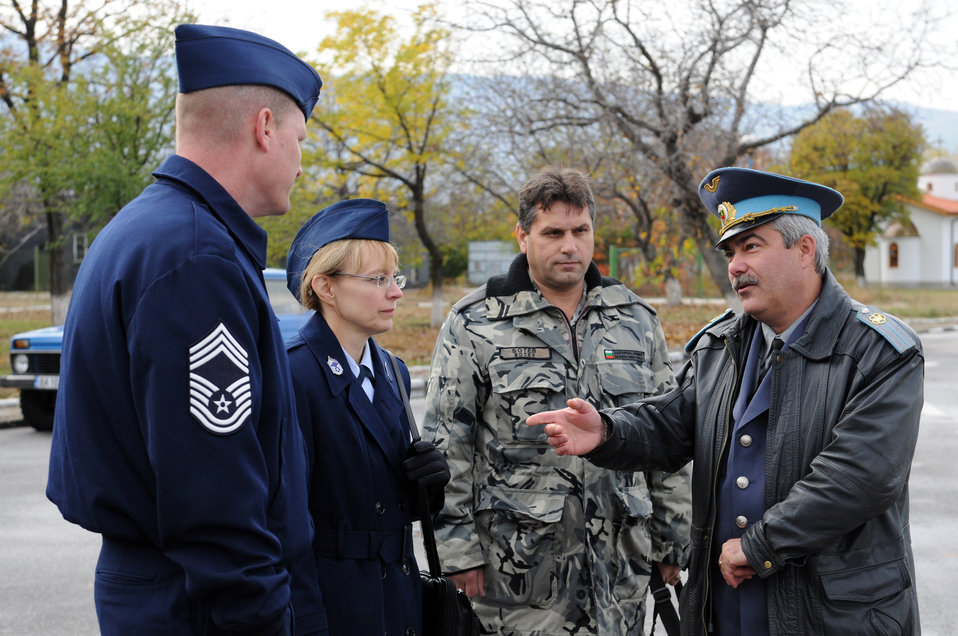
USAFE command chief builds partnership in Bulgaria

Chief Master Sgt. Pamela Derrow and Chief Master Sgt. David Lawrence discuss enlisted force development issues with Warrant Officer Ivo Bakardijiva, the acting chief master sergeant of the Bulgarian air force (right) and Bulgarian Chief Master Sgt. Hristo Botev, the command chief for Krumovo Air Force Base, Bulgaria. Chief Derrow is the USAFE command chief and Chief Lawrence is the Kipling NCO Academy commandant.